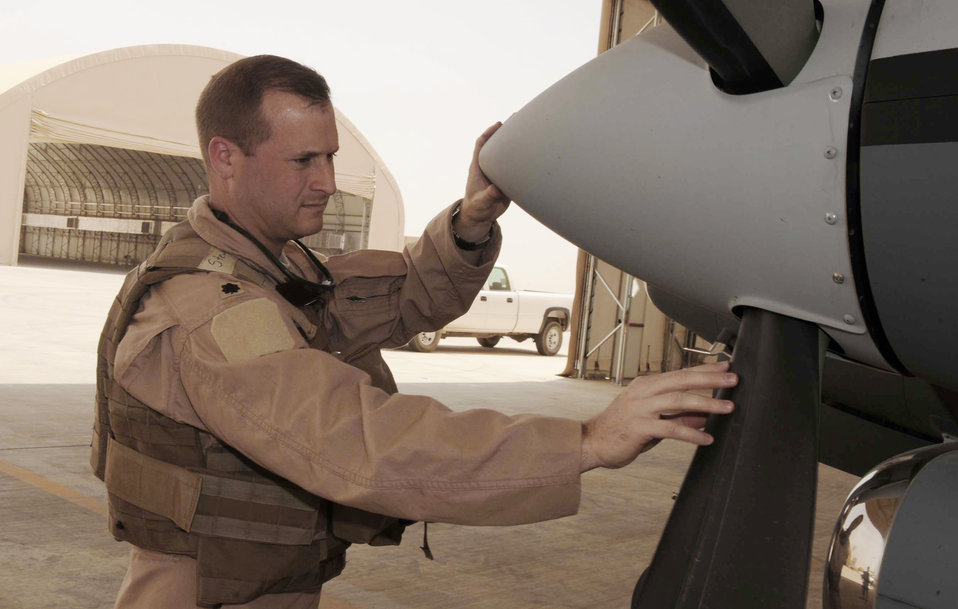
MC-12 flies first combat mission

Lt. Col. Phillip Stewart conducts a preflight inspection of an MC-12 Liberty prior to the aircraft's first combat sortie June 10 at Joint Base Balad, Iraq. A native of Silver Spring, Md., Colonel Stewart is the 362nd Expeditionary Reconnaissance Squadron commander and deployed from Langley Air Force Base, Va.